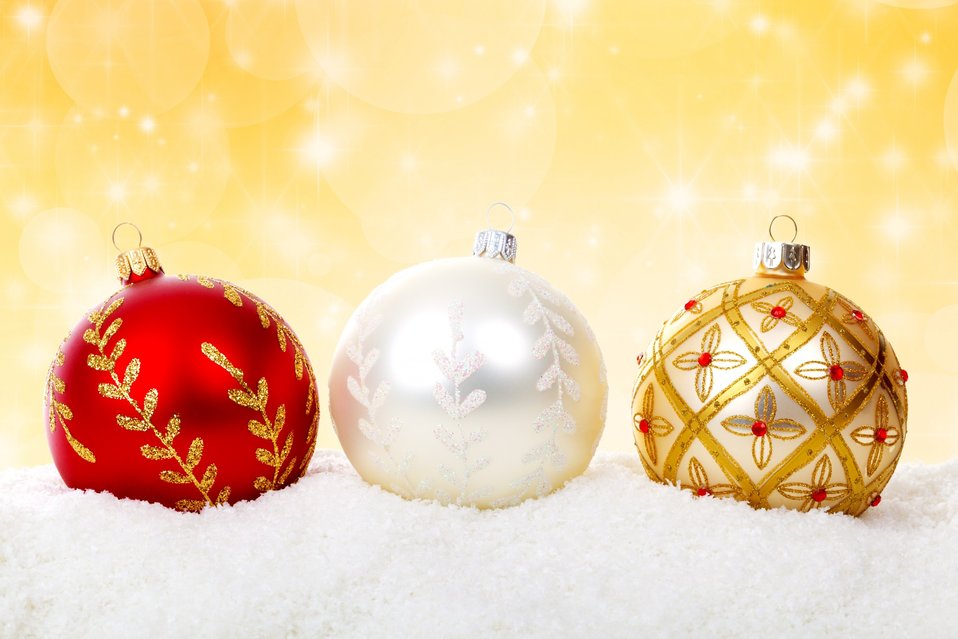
Colorful christmas balls in snow on golden background.